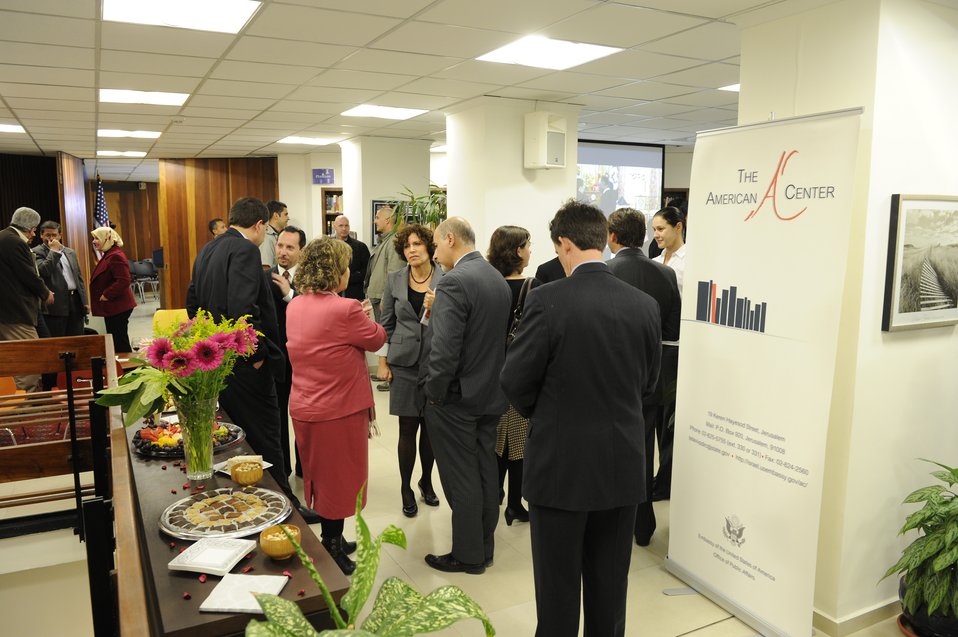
Ambassador Cunningham, Consul General Rubinstein, and CISCO Senior Manager Abzuk Celebrate the ACE Award in Jerusalem

U.S. Ambassador to Israel James Cunningham, U.S. Consul General to Israel Daniel Rubinstein, and Cisco Senior Manager Zika Abzuk, linked via digital video conference with the Secretary of State's Award for Corporate Excellent (ACE) event in Washington, D.C., celebrate the Award at a Jerusalem event in Israel, December 17, 2010. [State Department photo/ Public Domain]

At a Jerusalem event, linked via digital video conference with the Secretary's event, U.S. Ambassador James Cunningham, U.S. Consul General Daniel Rubinstein, and Cisco Senior Manager Zika Abzuk celebrate the Award.

Cisco, the computer networking company, was chosen for helping to connect the Israeli and Palestinian economies and people, and engaging in several partnerships and initiatives to enhance technical capacity, connectivity, education, and opportunities for women and youth in Israel, the West Bank and Gaza.